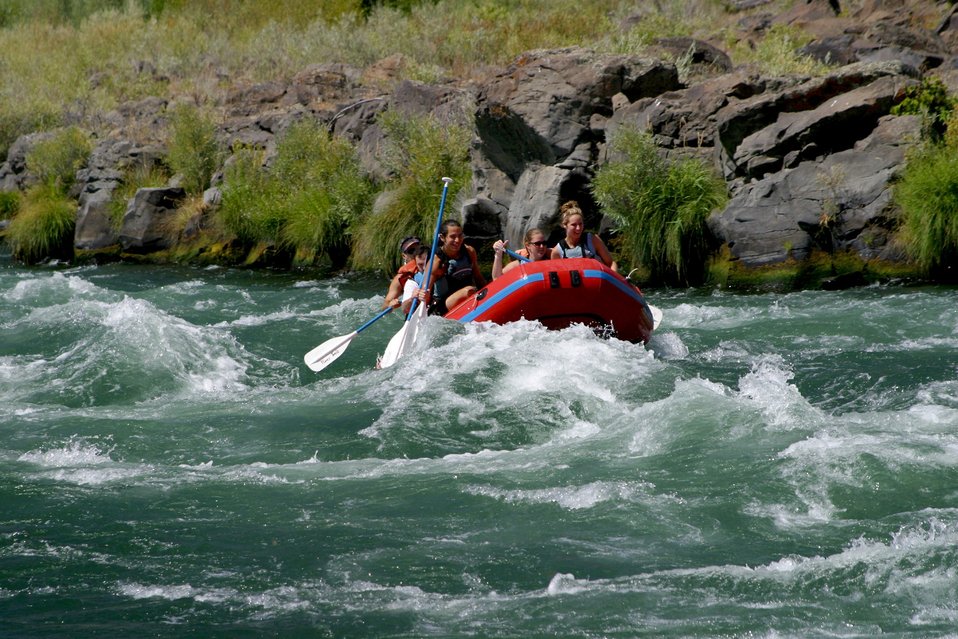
Wapinitia Rapids class III, has large roller coaster waves. 7/26/03 Pelton Dam 3600 cfs: Moody Rapids 4300 cfs.